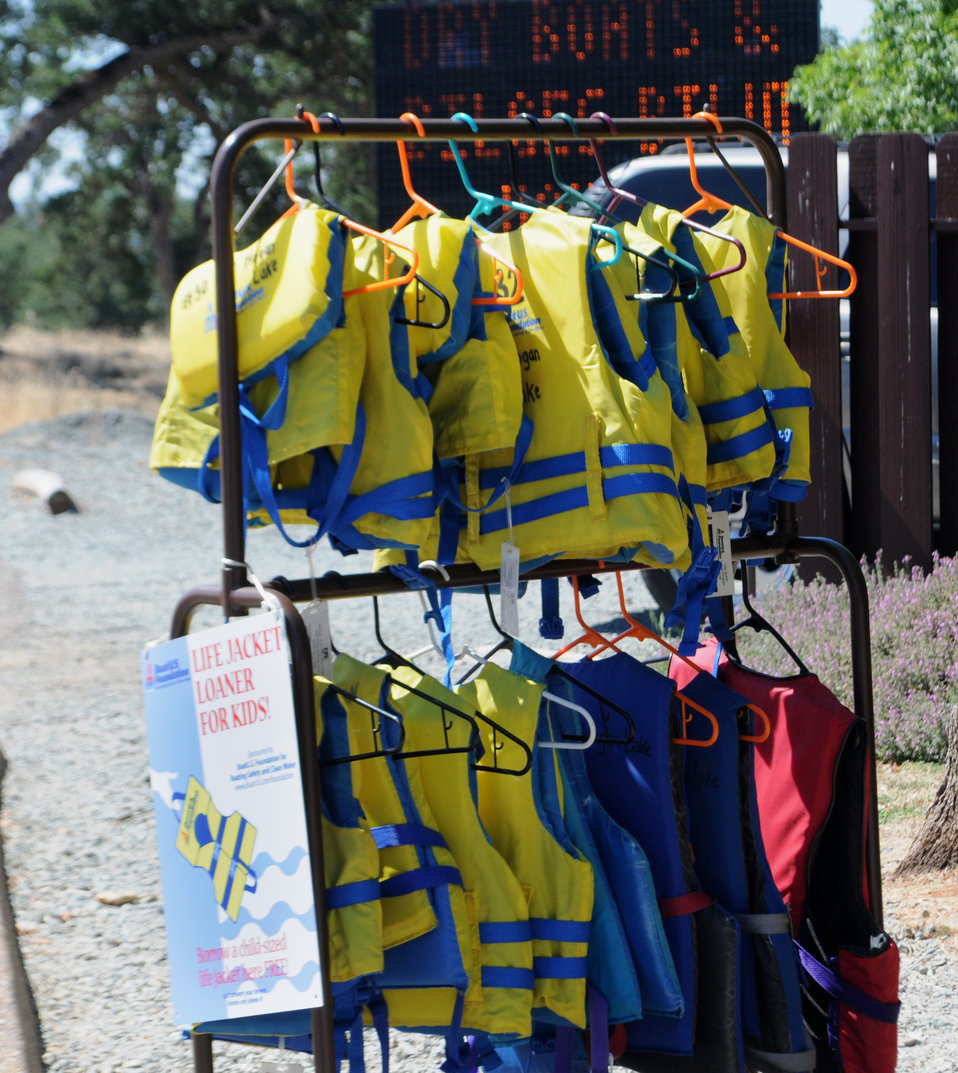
New Hogan Lake and Dam, Calaveras County, Calif.

Life jacket loaners for children hang on display at the entrance to New Hogan Lake near Valley Springs, Calif., July 8. The lake has 50 miles of shoreline when full, and includes several campsites, boat ramps, disc golf (Frisbee golf) and other recreational activities open to the public. The U.S. Army Corps of Engineers Sacramento District manages the lake and encourages visitors to wear life jackets during any activity on or near the water. There are also adult life jackets available for loan.